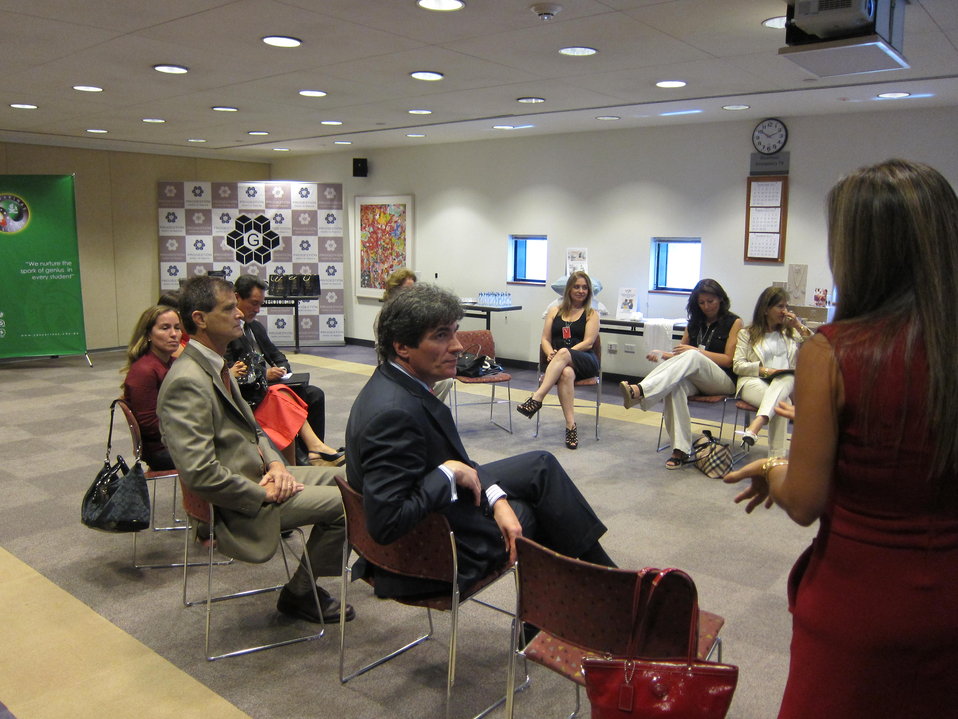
Assistant Secretary Fernandez Meets With Women Entrepreneurs

Assistant Secretary of State for Economic and Business Affairs Jose Fernandez meets with WEConnect International women entrepreneurs, who are part of the Pathways Access Initiative, in Lima, Peru, on February 17, 2012.